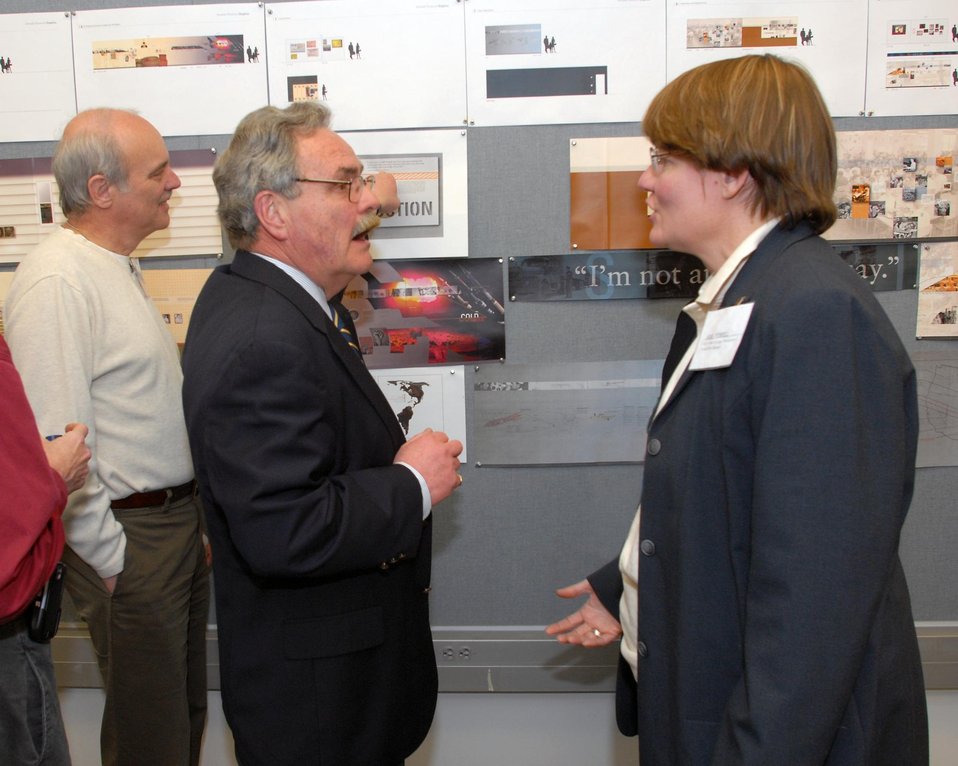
Michael Owen, Director of the U.S. Department of Energy (DOE) Office of Legacy Management and Jane Powell, DOE-Fernald Preserve Site Manager, discuss exhibit content in a Design Charrette.